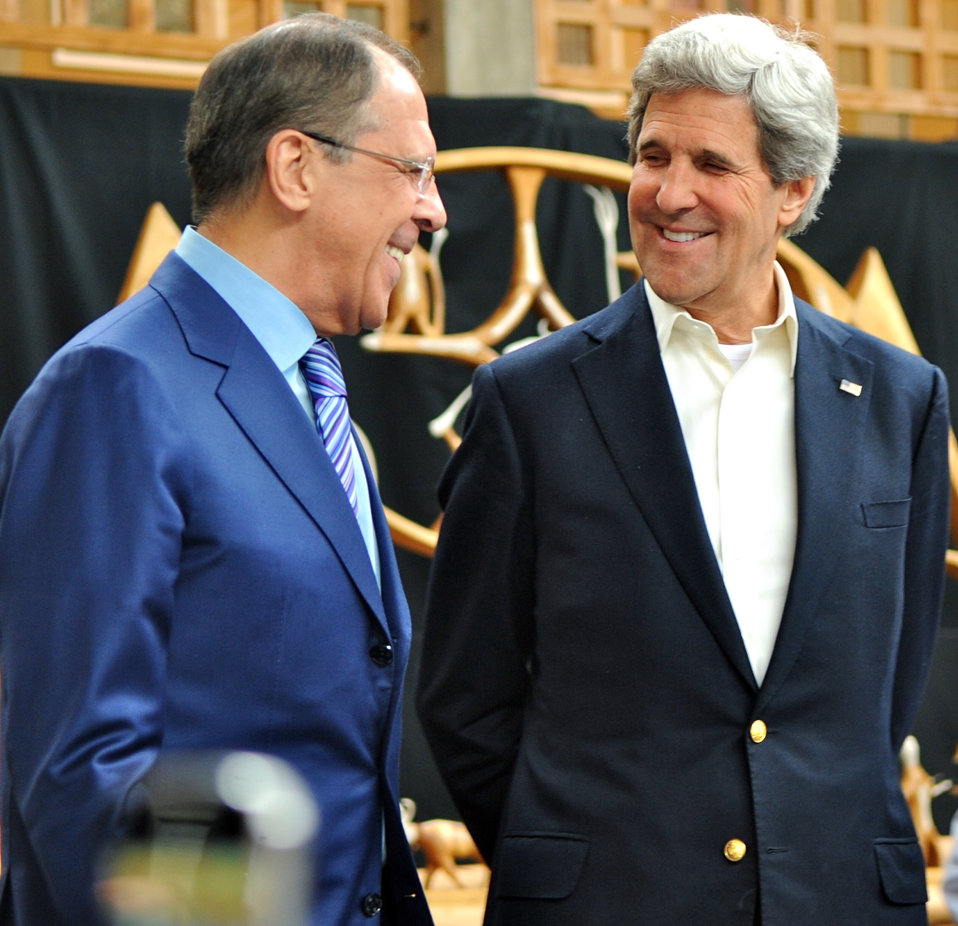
Secretary Kerry Attends the Closing Session of the Arctic Council Meeting

U.S. Secretary of State John Kerry and Russian Foreign Minister Sergei Lavrov chat during the conclusion of the Eighth Arctic Council meeting in Kiruna, Sweden, on May 15, 2013.